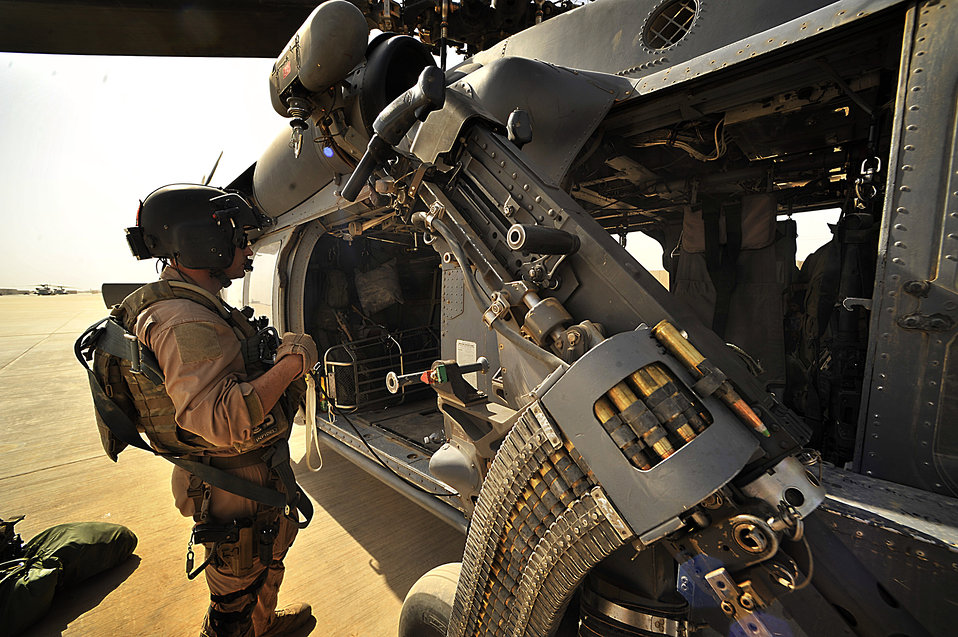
All systems are 'go'

Staff Sgt. Ben Vorheis, a flight engineer with the 66th Expeditionary Rescue Squadron, conducts a pre-flight inspection on a HH-60G Pave Hawk Sept.19 before a proficiency training exercise at Joint Base Balad, Iraq.